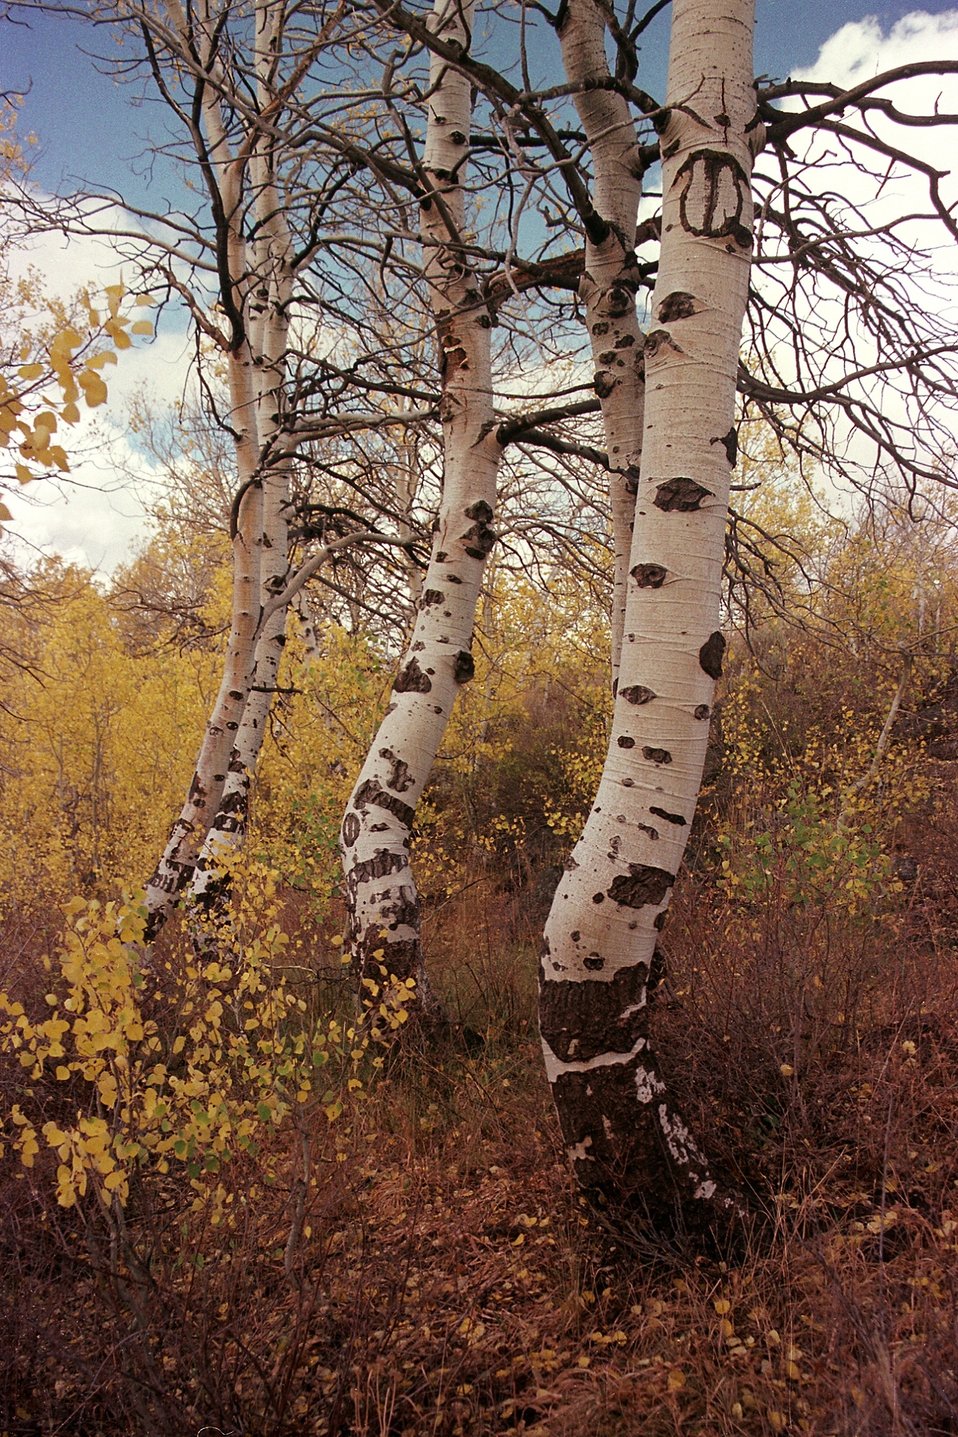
Aspens at Fish Lake, Steen's Mountain.